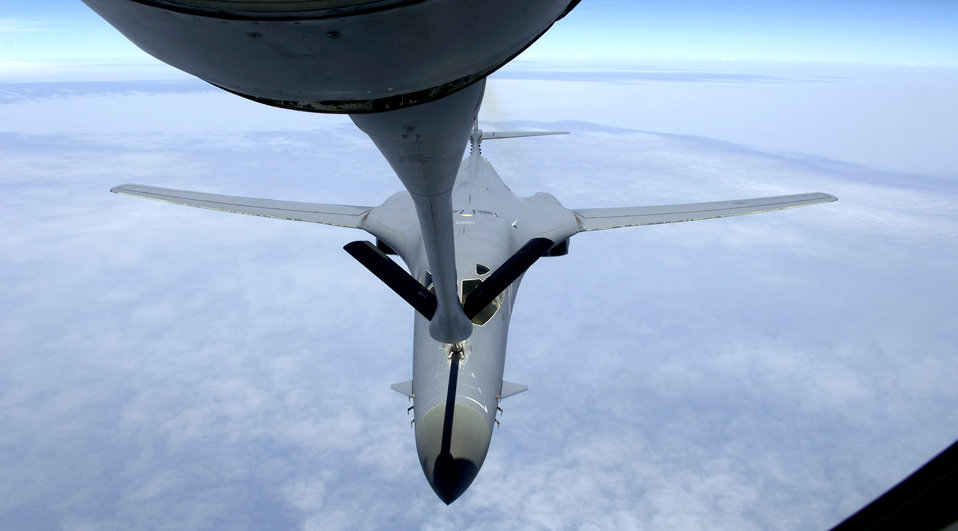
KC-135 bringing fuel to fight

A B-1B Lancer connects with a KC-135 Stratotanker refueling boom over the Indian Ocean on Friday, July 7. The B-1 was flying a close-air support mission in support of Operation Enduring Freedom. The B-1 and KC-135 aircraft are stationed at a forward operating base in Southwest Asia.